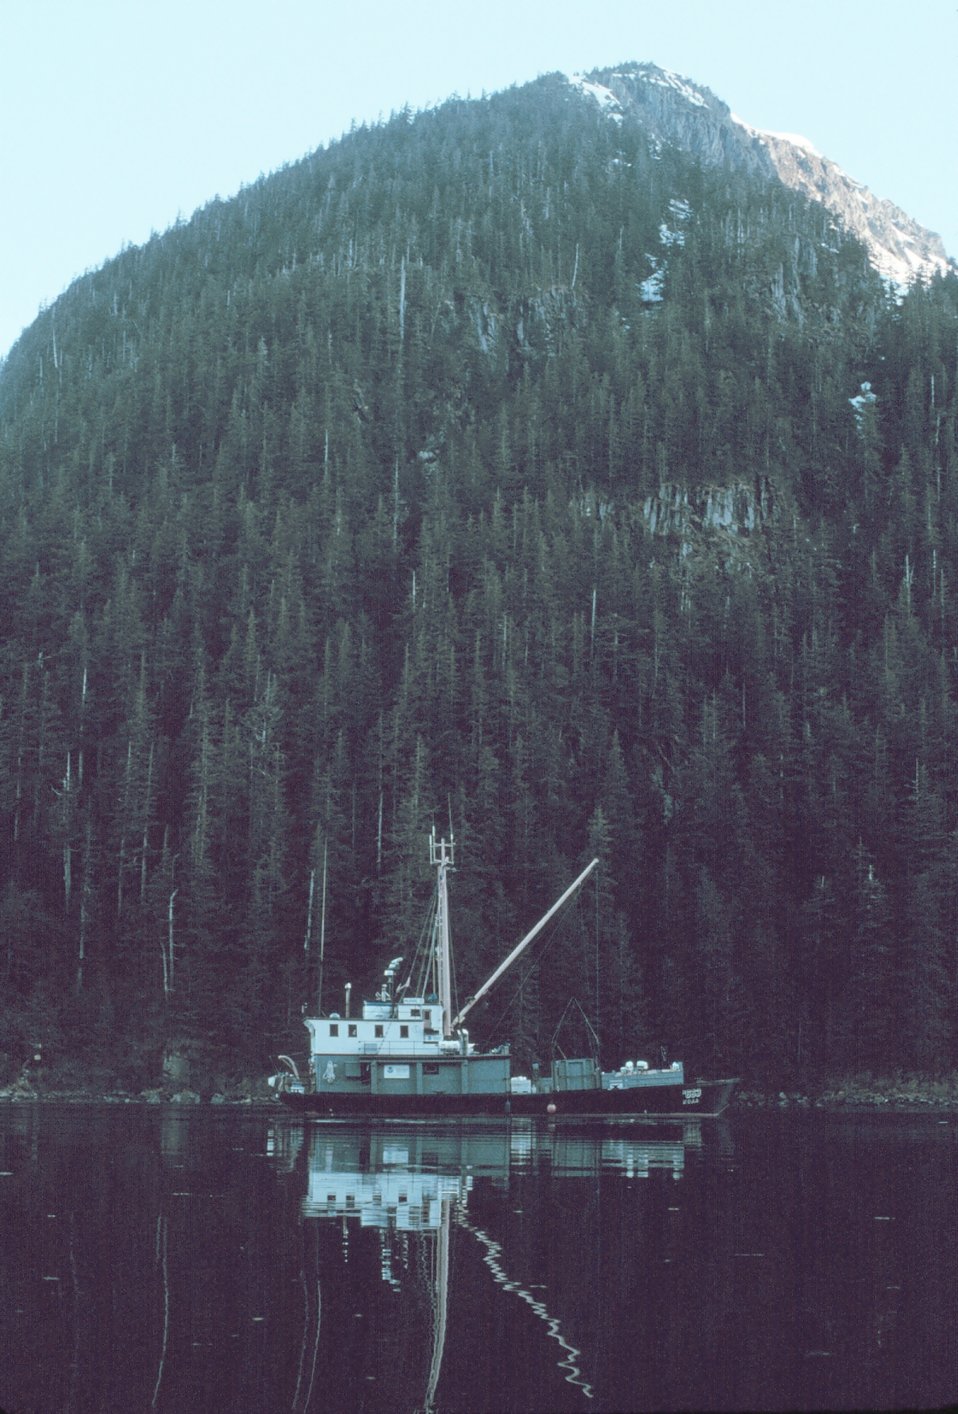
NOAA Ship MURRE II